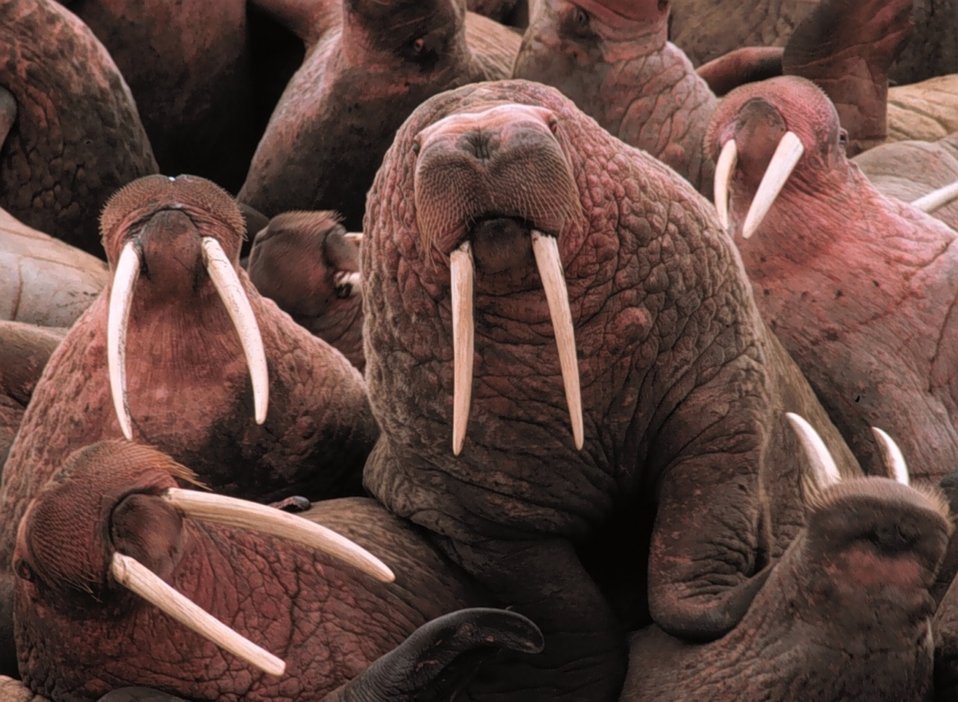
Walrus

Pacific walrus.